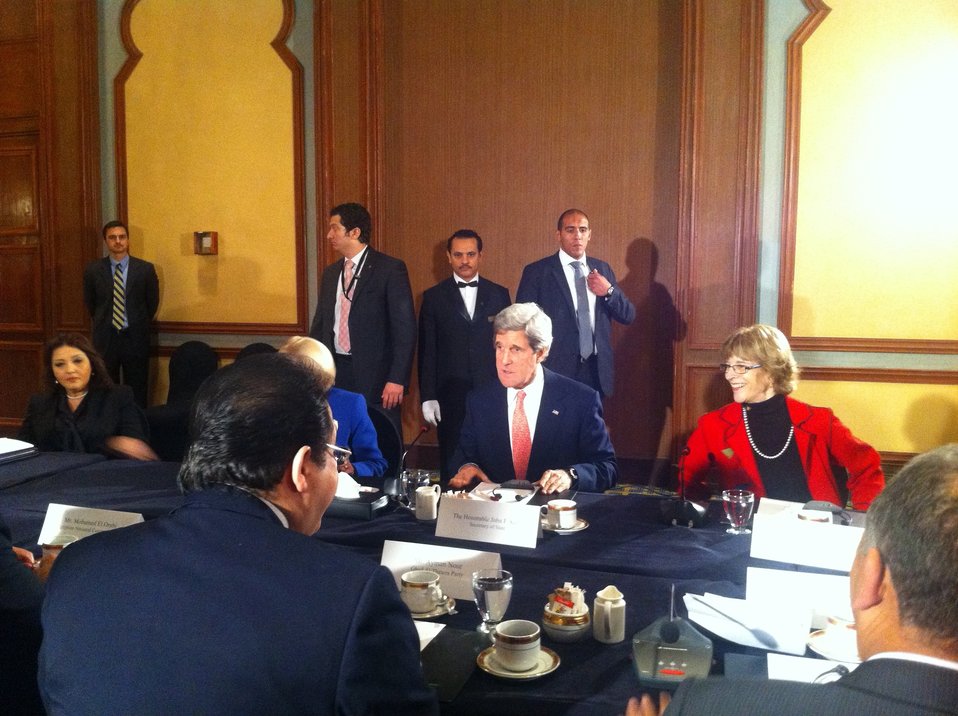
Secretary Kerry Meets With Oppositions Leaders

U.S. Secretary of State John Kerry meets with oppositions leaders in Cairo, Egypt, on March 2, 2013.